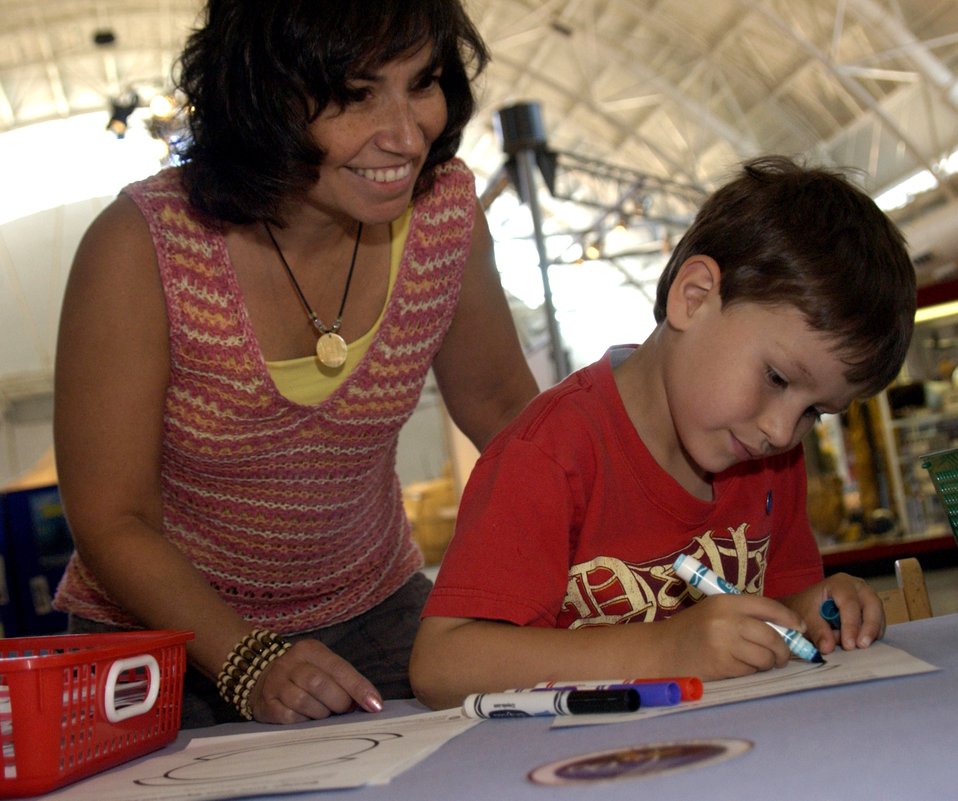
National Air and Space Museum family day wows visitors

Nicholas Willey, age 5, and his mom, Anne Ellis, design their own Air Force patch June 16 during the